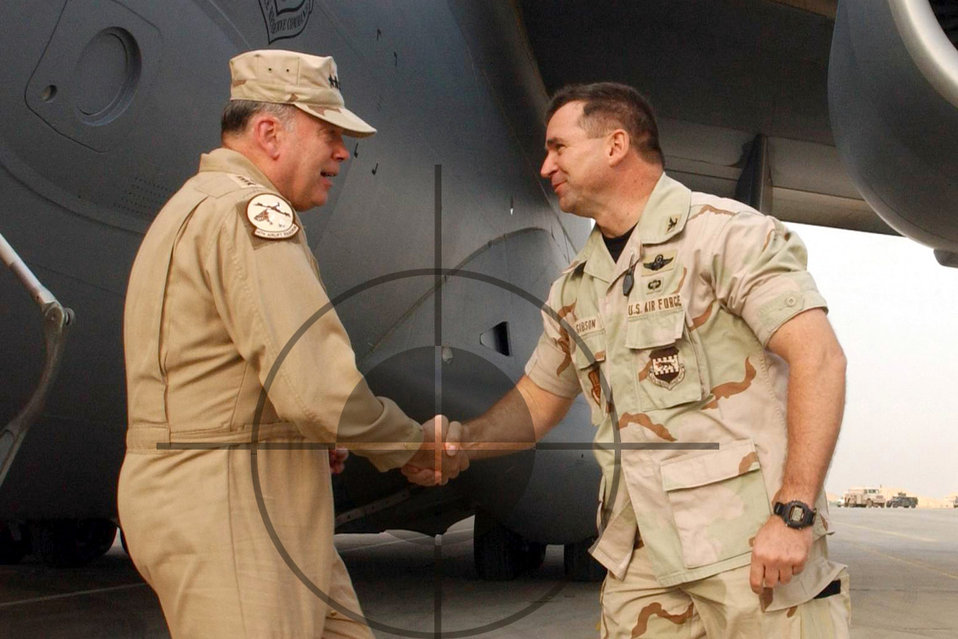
Say cheese!

TALLIL AIR BASE, Iraq -- Airmen with the 407th Expeditionary Communications Squadron's multimedia section document life here including a visit by Air Force Chief of Staff Gen. John P. Jumper (left). Images are sent to the Joint Combat Camera Center to be archived.